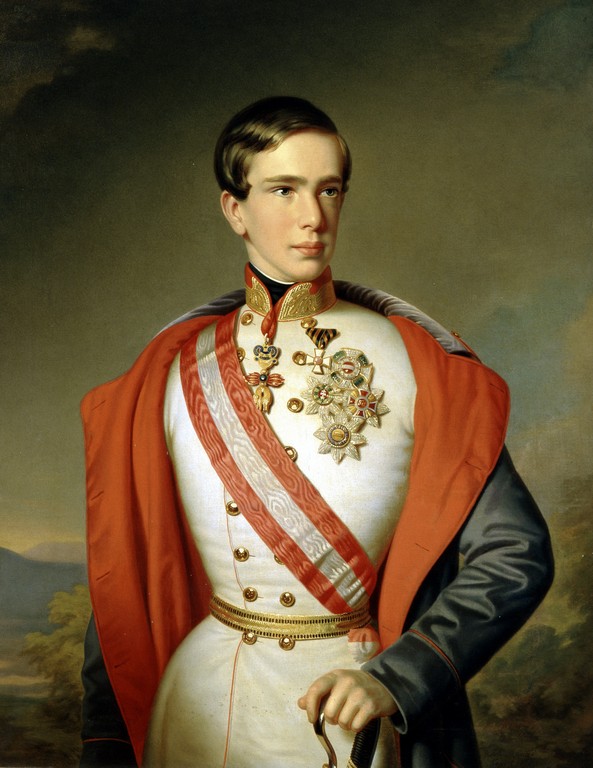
Franz Joseph of Austria young